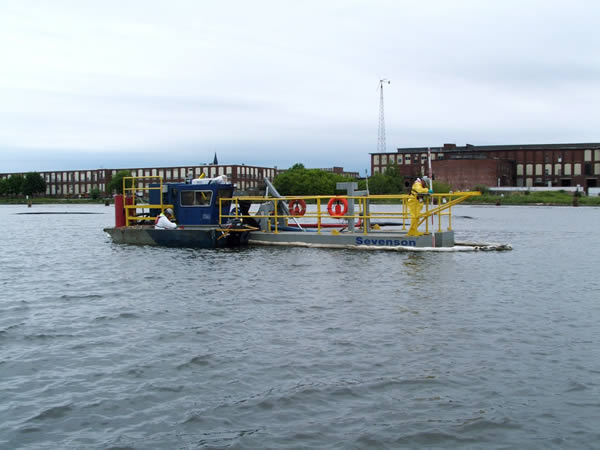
June 2009, Cleaning up an industrial past